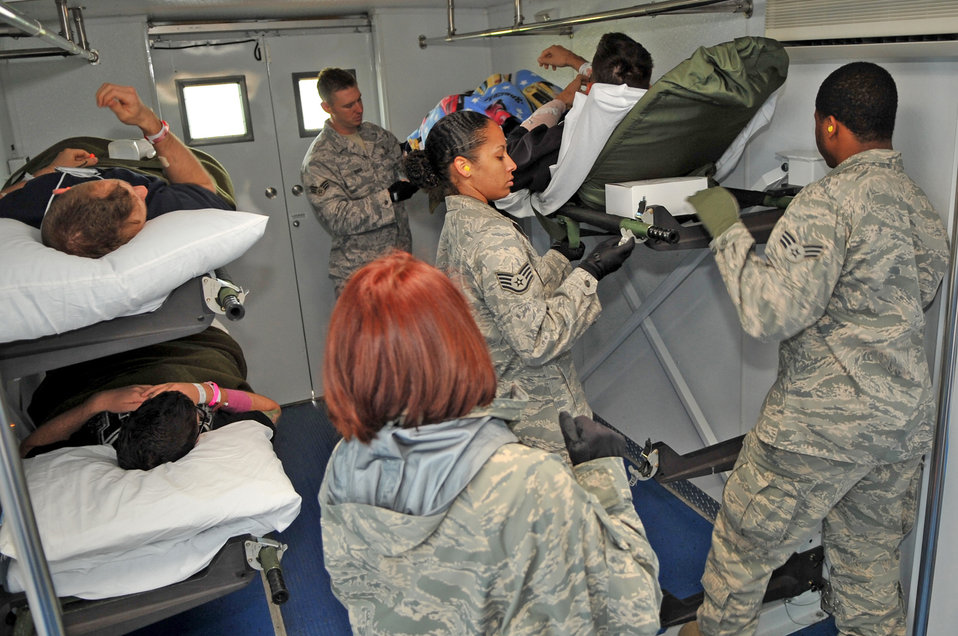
Medical teams,volunteers help during delays

Staff Sgt. Beverly Jones (front left), Senior Airmen Alex Altman (front right) and Senior Airmen Dane Queen (back) secure a litter on a patient loading platform truck Nov. 18, 2009 at Scott Air Force Base, Ill. Sergeant Jones is from the 375th Aeromedical Staging Flight. Airman Altman is from the 375th Medical Operations Squadron and Airman Queen is a 375th Aeromedical Staging Flight Member.